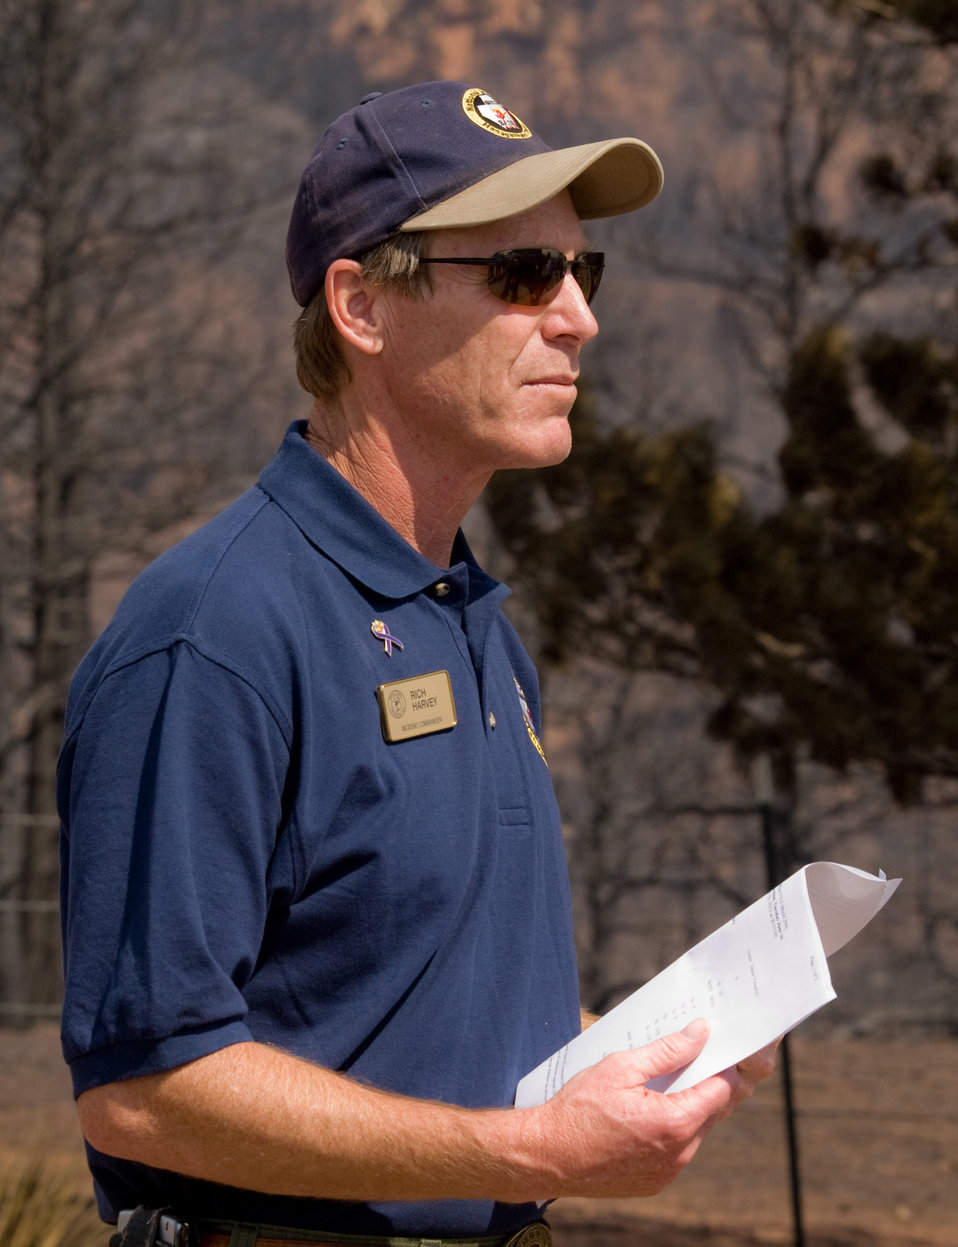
U.S. Forest Service Fire Incident Commander Rich Harvey briefs Agriculture Secretary Tom Vilsack (not shown) and Homeland Securty Secretary Janet Nalolitano (not shown) on the status of the Waldo Canyon Fire near Colorado Springs, Colo., on Tuesday, July 3, 2012.